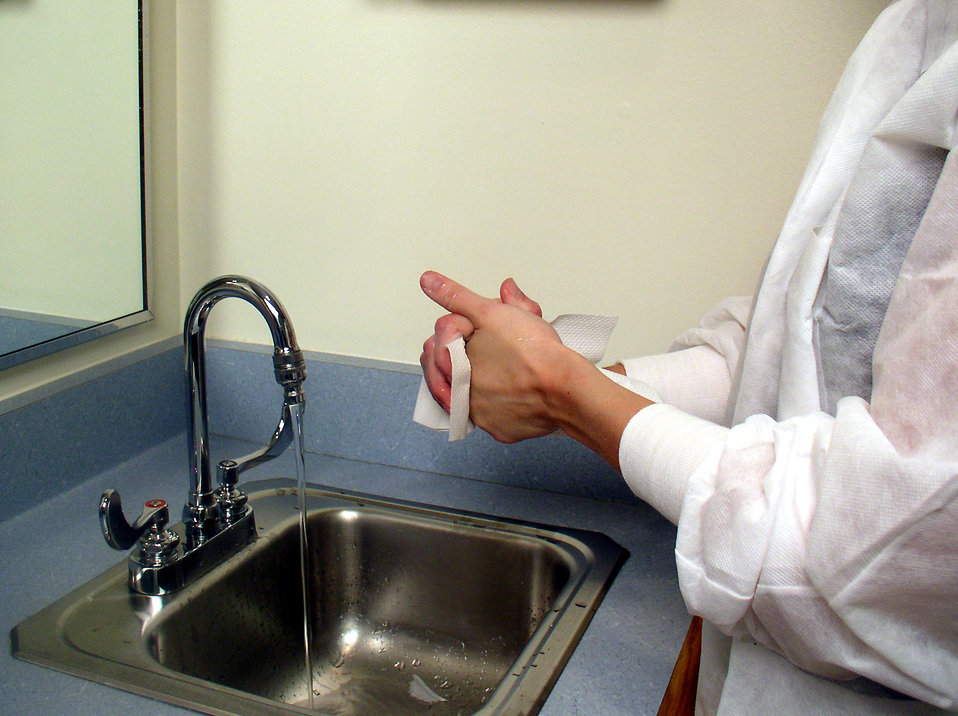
(Image 9 - Hand Washing Procedure) This laboratorian is shown drying her hands with a disposable hand towel.